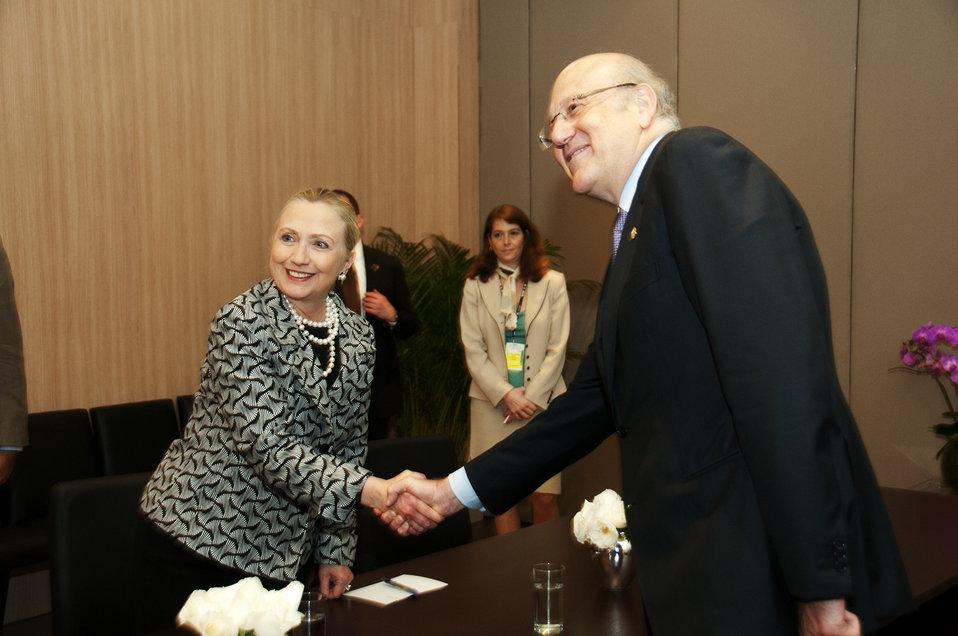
Secretary Clinton Shakes Hands With Lebanese Prime Minister Mikati

U.S. Secretary of State Hillary Rodham Clinton shakes hands with Lebanese Prime Minister Najib Mikati in Rio de Janeiro, Brazil during Rio 20 Conference on June 22, 2012.